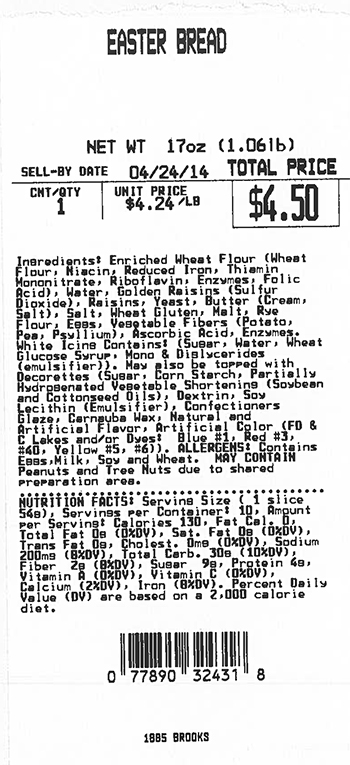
RECALLED – Easter Bread

April 21, 2014 – Product Recall – Wegmans Food Markets, Inc. Issues Allergy Alert on Undeclared Egg in Wegmans Easter Bread, 17 oz..